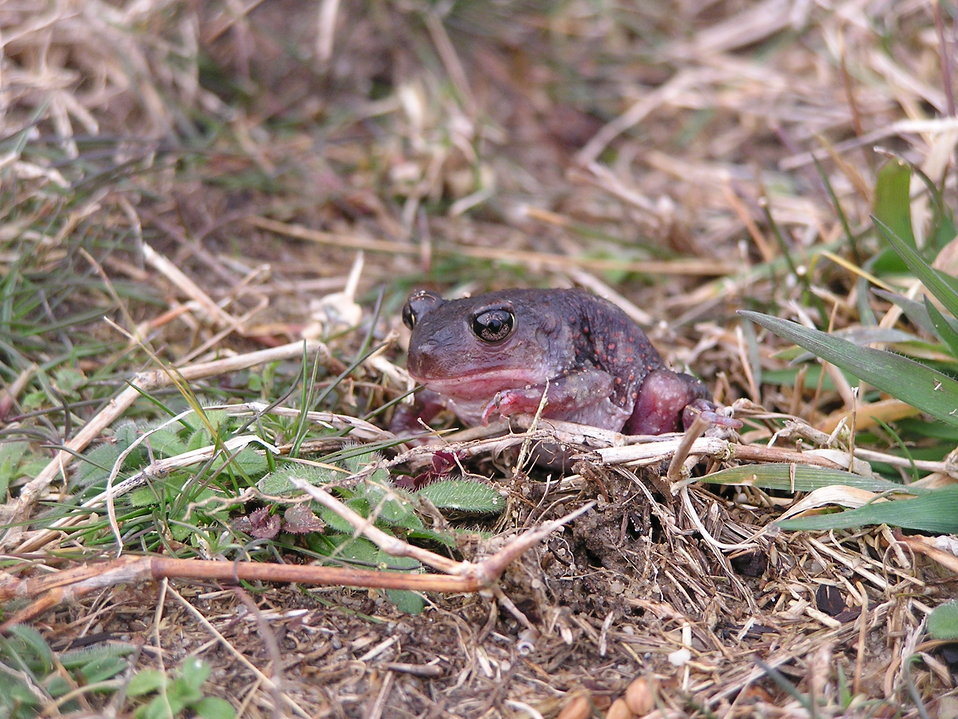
Eastern spadefoot toad at Cape May National Wildlife Refuge.